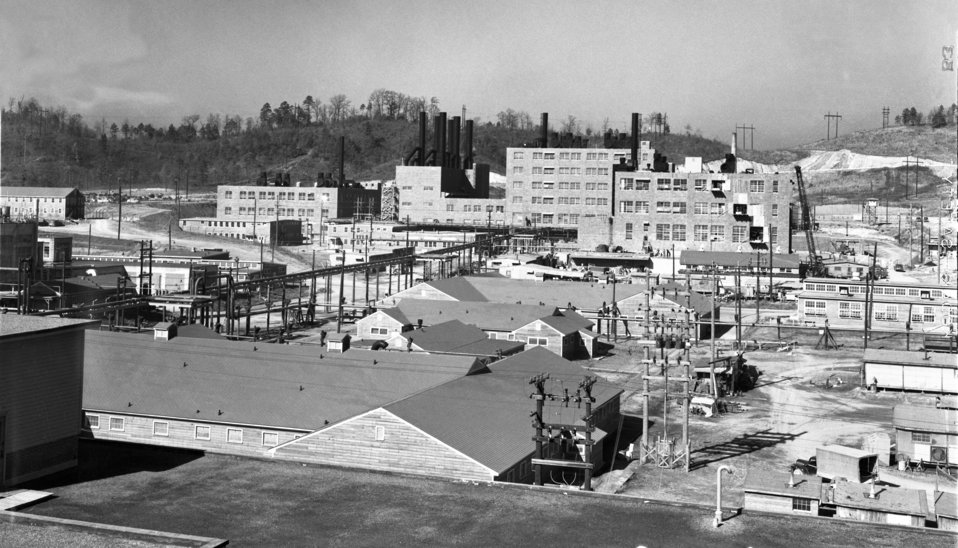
Y-12 Tennessee Eastman Plant Oak Ridge 1946

3283-6aa DOE photo Ed Westcott 1946 Oak Ridge Tennessee